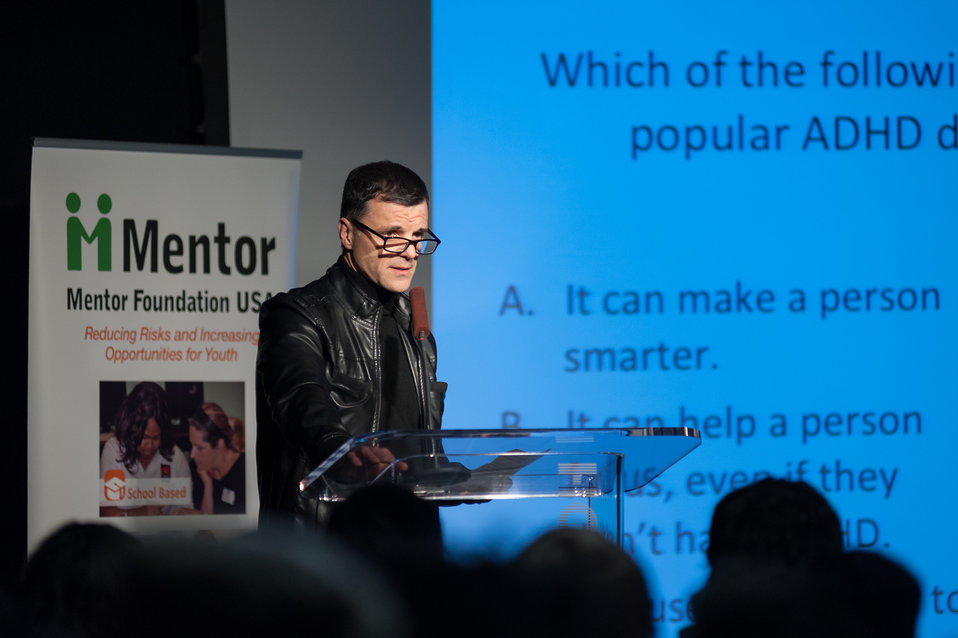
Mentor NDFW Event 2014

Mentor Foundation USA, in partnership with the National Institute on Drug Abuse (NIDA) and other key partners hosted a Youth Drug Facts Rally at the House of Sweden on Thursday, 30th January 2014. Approximately 200 students from five local high schools attended and had the opportunity to interact with top U.S. scientific experts, including Dr. Ruben Baler of NIDA and inspiring guest speakers to “shatter the myths” about drugs and substance abuse, while pledging to stay drug-free.